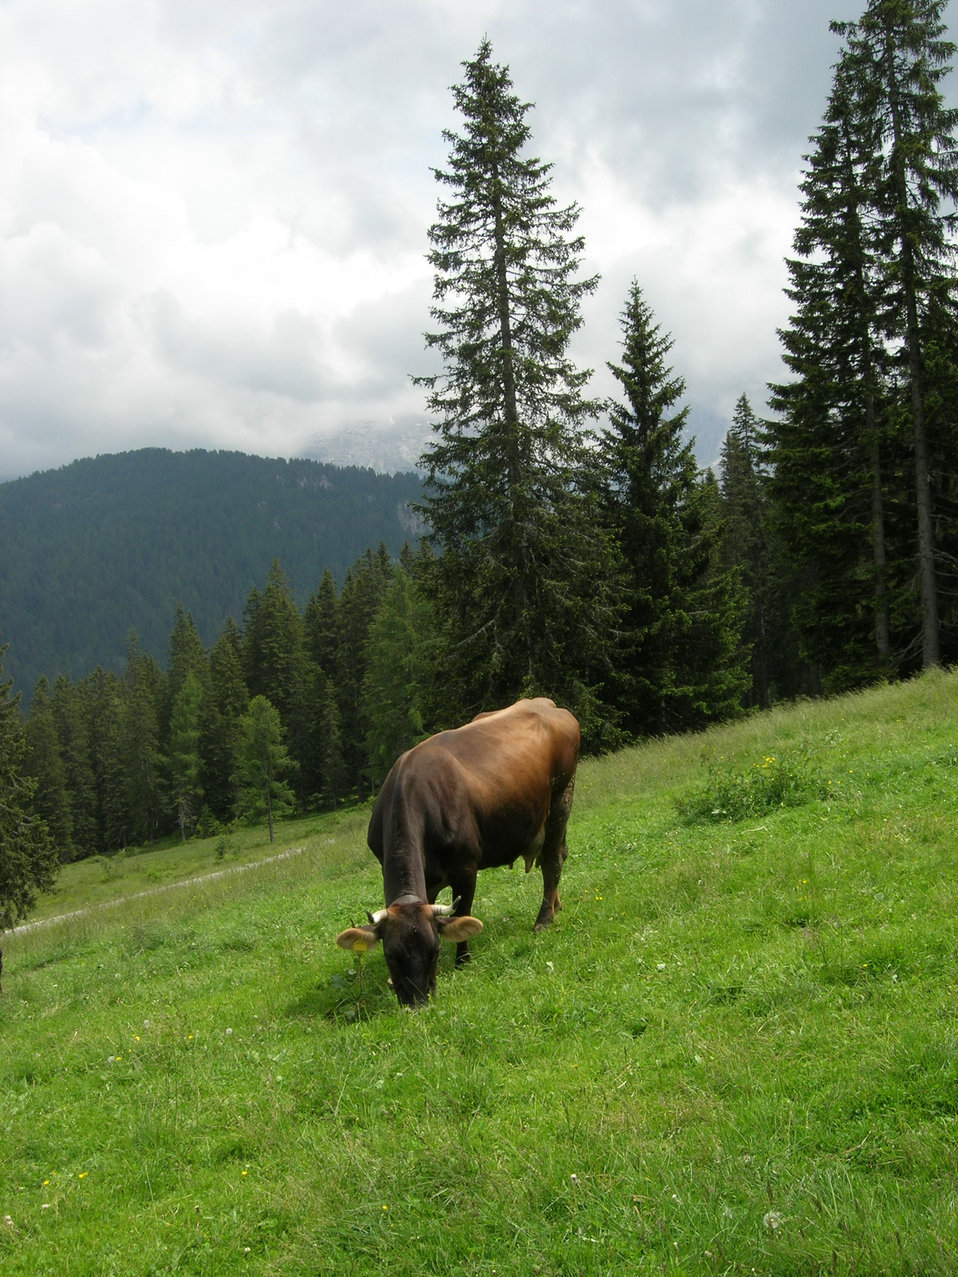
Italiano: la bovina DUCE FURBA al pascolo. Razza Rendena Rendena cattle breed